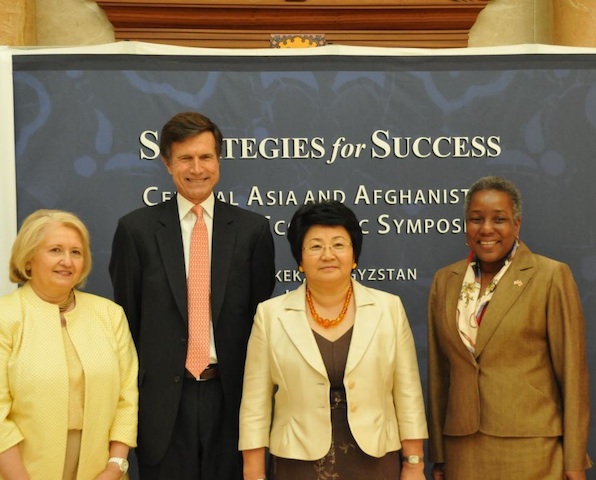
Ambassador Verveer, Assistant Secretary Blake, Kyrgyz Republic President Otunbayeva, and Ambassador Spratlen Pose for a Photo

U.S. Ambassador-at-Large for Global Women’s Issues Melanne Verveer, left; U.S. Assistant Secretary of State for South and Central Asian Affiars Robert Blake, second from left; Kyrgyz Republic President Roza Otunbayeva, second from right; U.S. Ambassador to the Kyrgyz Republic Pamela Spratlen; right; pose for a photo at the President’s residence before the opening of the Central Asia and Afghanistan Women’s Economic Symposium in Bishkek, Kyrgyzstan, on July 18, 2011.